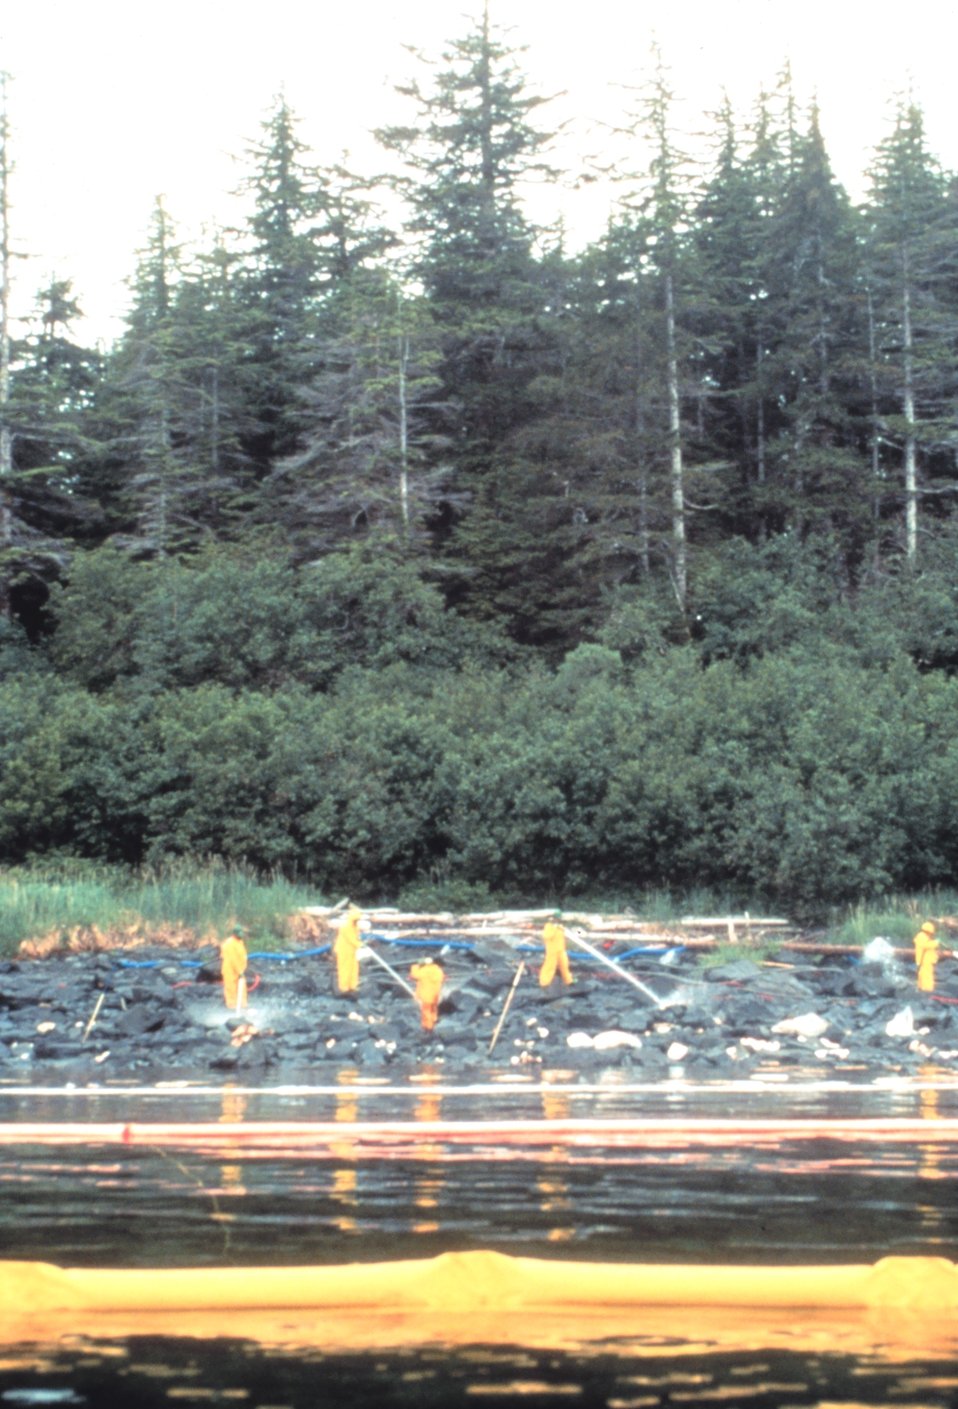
Workers cleaning oiled shoreline